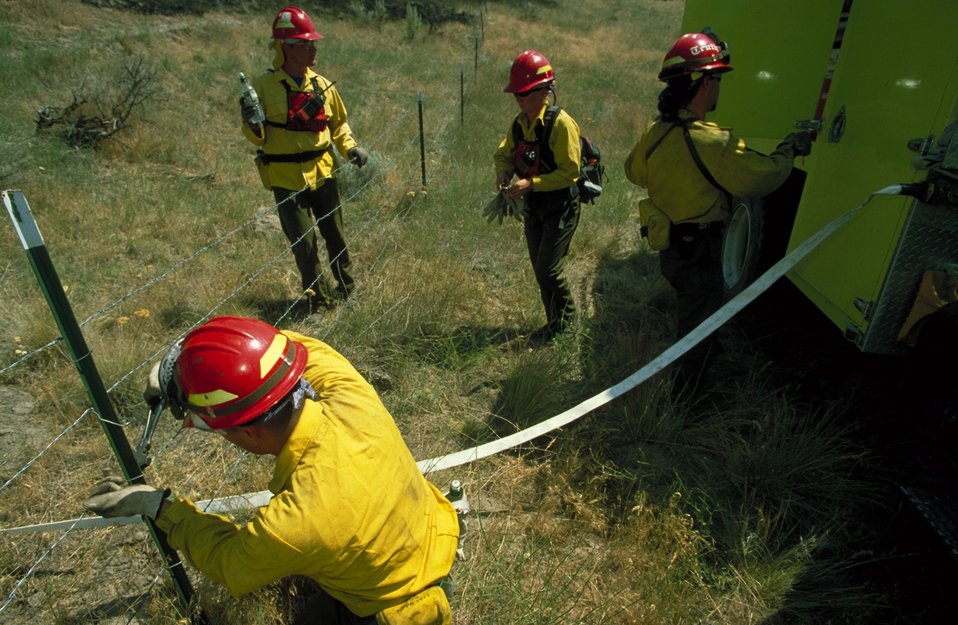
Fence cutting Fire Season 2000 Lower Snake River District LSRD